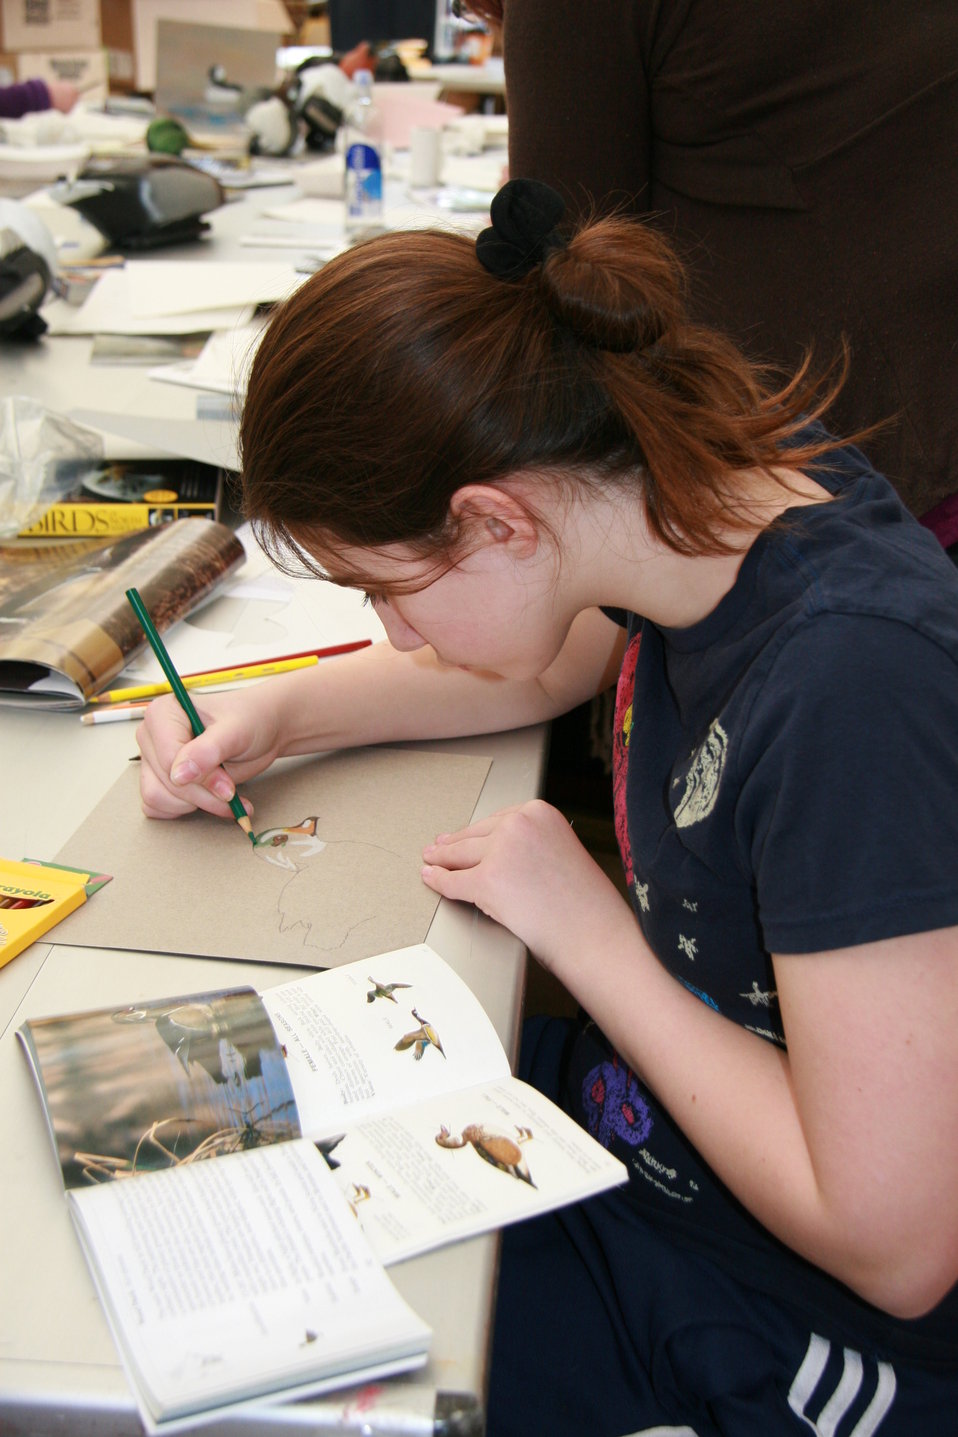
North Dakota Jr. Duck Stamp Program

Each spring, Junior Duck Stamp competition begins when students submit their artwork to state contests. At the state level, students are judged in four groups according to grade level: K-3, 4-6, 7-9, and 10-12.